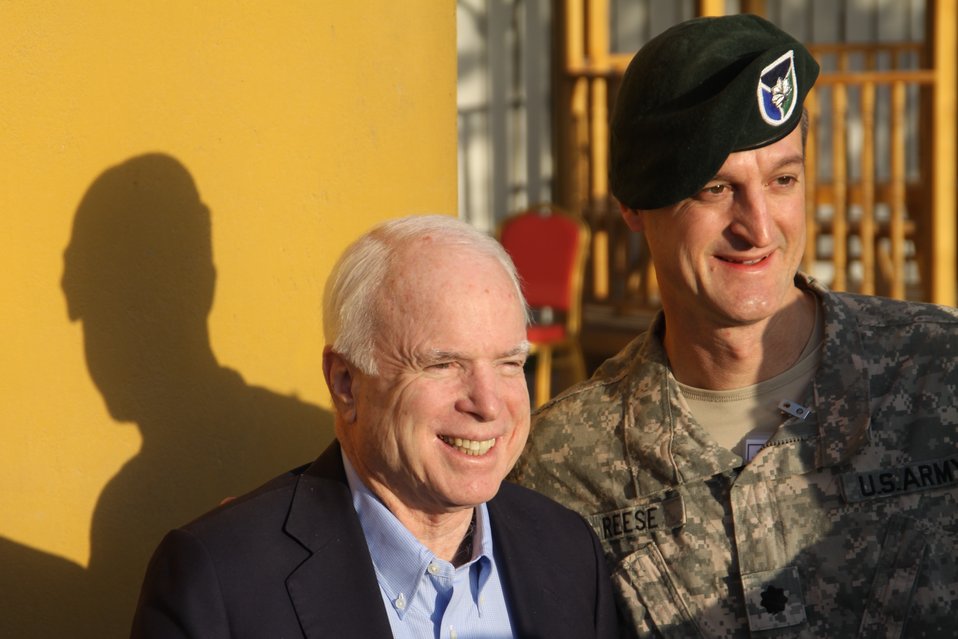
Senator McCain